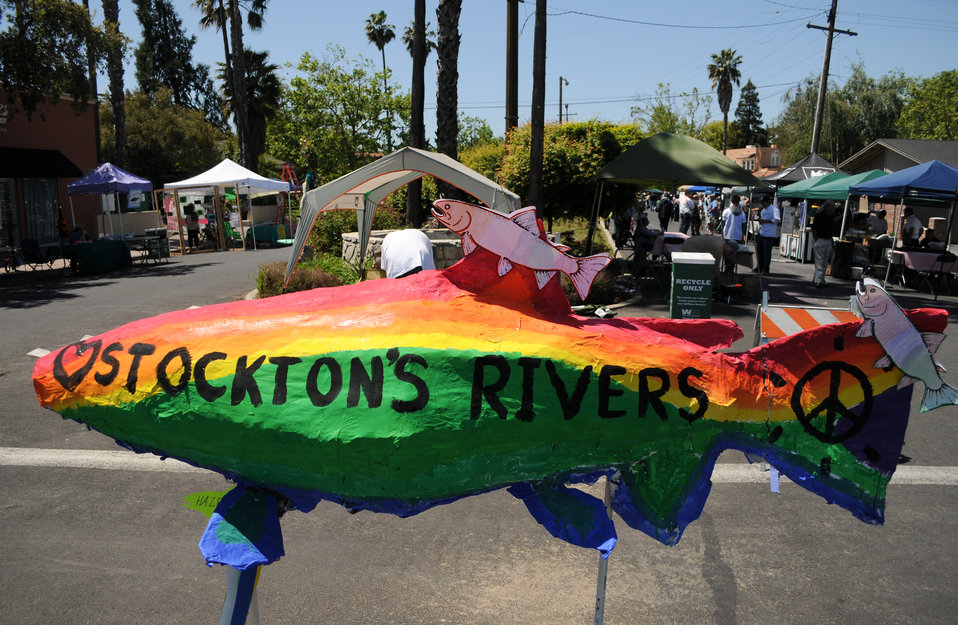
Stockton Steelhead Festival

STOCKTON, Calif. (May 1, 2011) – The entrance to the first-ever Stockton Steelhead Festival here May 1 makes clear that it’s all about the fish. New Hogan Lake park rangers were on hand at the event to talk about water safety and the importance of maintaining a healthy watershed in helping the steelhead population to recover. New Hogan Dam, managed by the U.S. Army Corps of Engineers Sacramento District, helps reduce Stockton’s flood risk and impounds the Calaveras River, Stockton’s main water supply. “To take care of the fish, we’ve got to take care of the water,” New Hogan park ranger Gary Basile said. Steelhead trout are listed by the U.S. Fish and Wildlife Service as a threatened species in the rivers of California’s Central Valley.